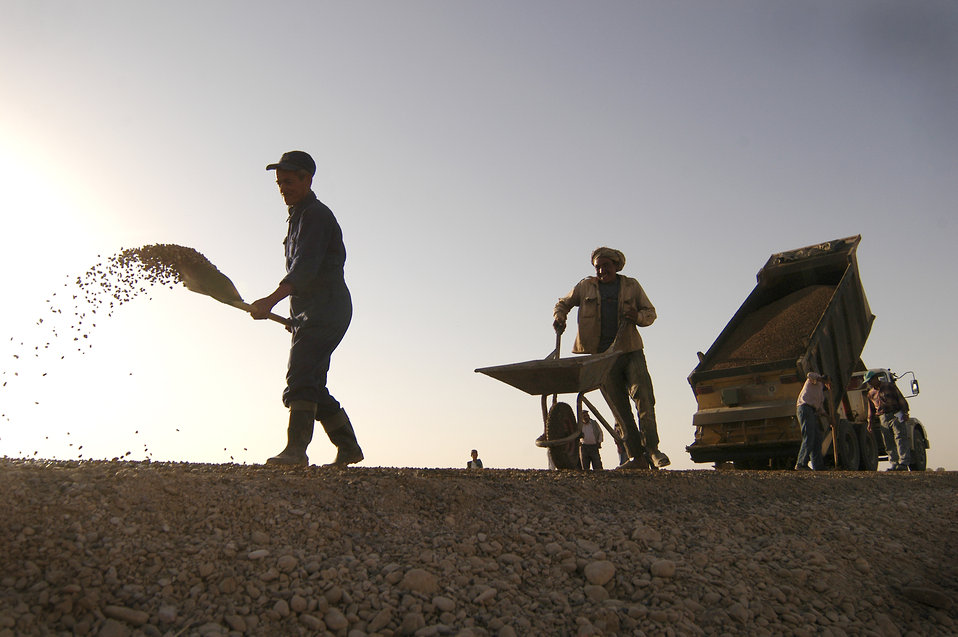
Road Construction

In 2002, Afghanistan had only 50 kilometers of intact roads, much of them littered with mines. Over the last 10 years USAID has paved nearly 2,000 kilometers of road throughout Afghanistan, including Shebirghan Road (photo) located in Jawzjan province.